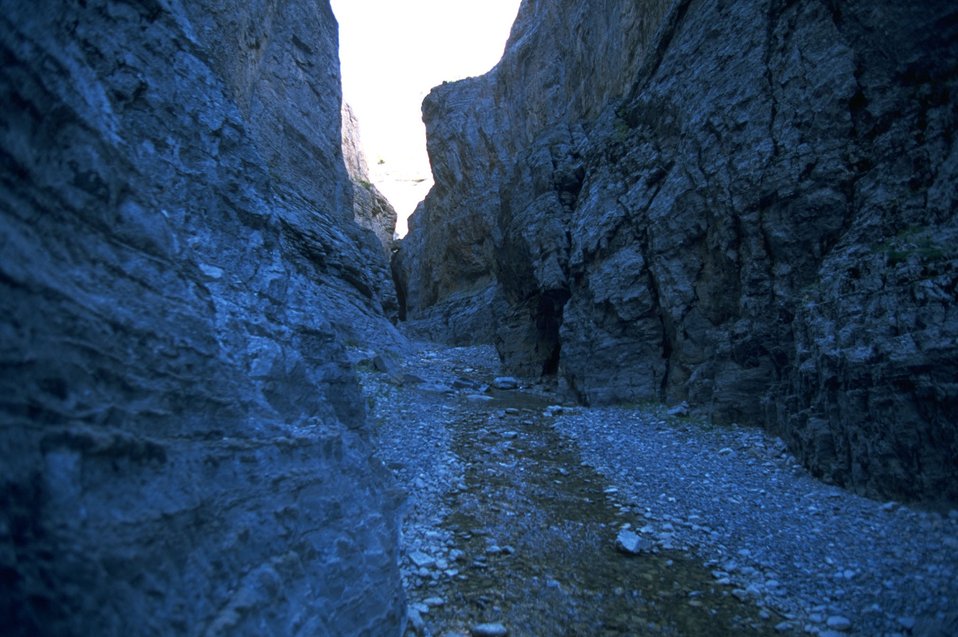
Looking west at Muddy Creek in the Rocky Mountain Front